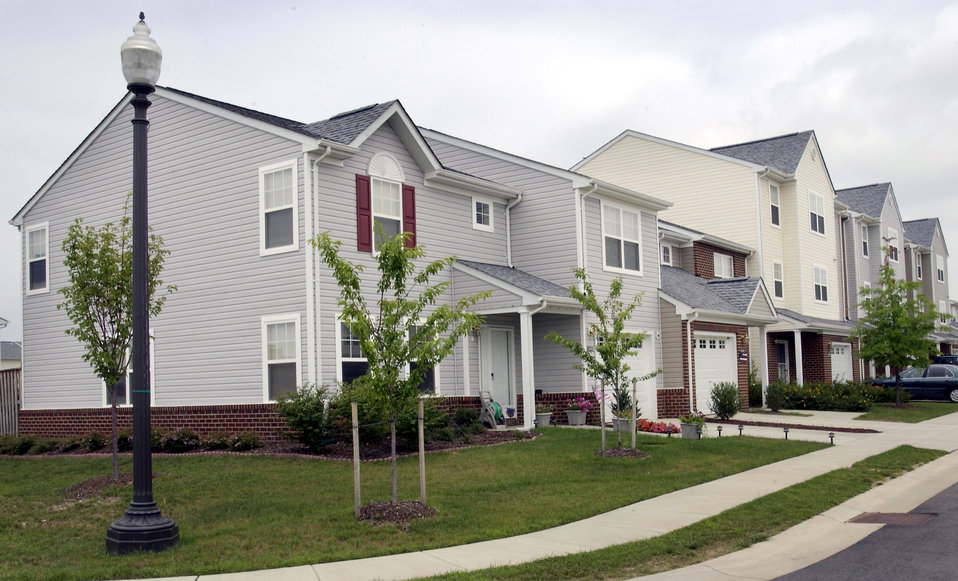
Safe, adequate housing gets highest priority

BOLLING AIR FORCE BASE, D.C. -- The recently opened housing here is part of the base's project to replace substandard housing and improve the quality of life for Air Force families. Providing adequate housing allows Airmen to focus on the mission knowing their families have a safe place to live, said Air Force Chief of Staff Gen. John P. Jumper.